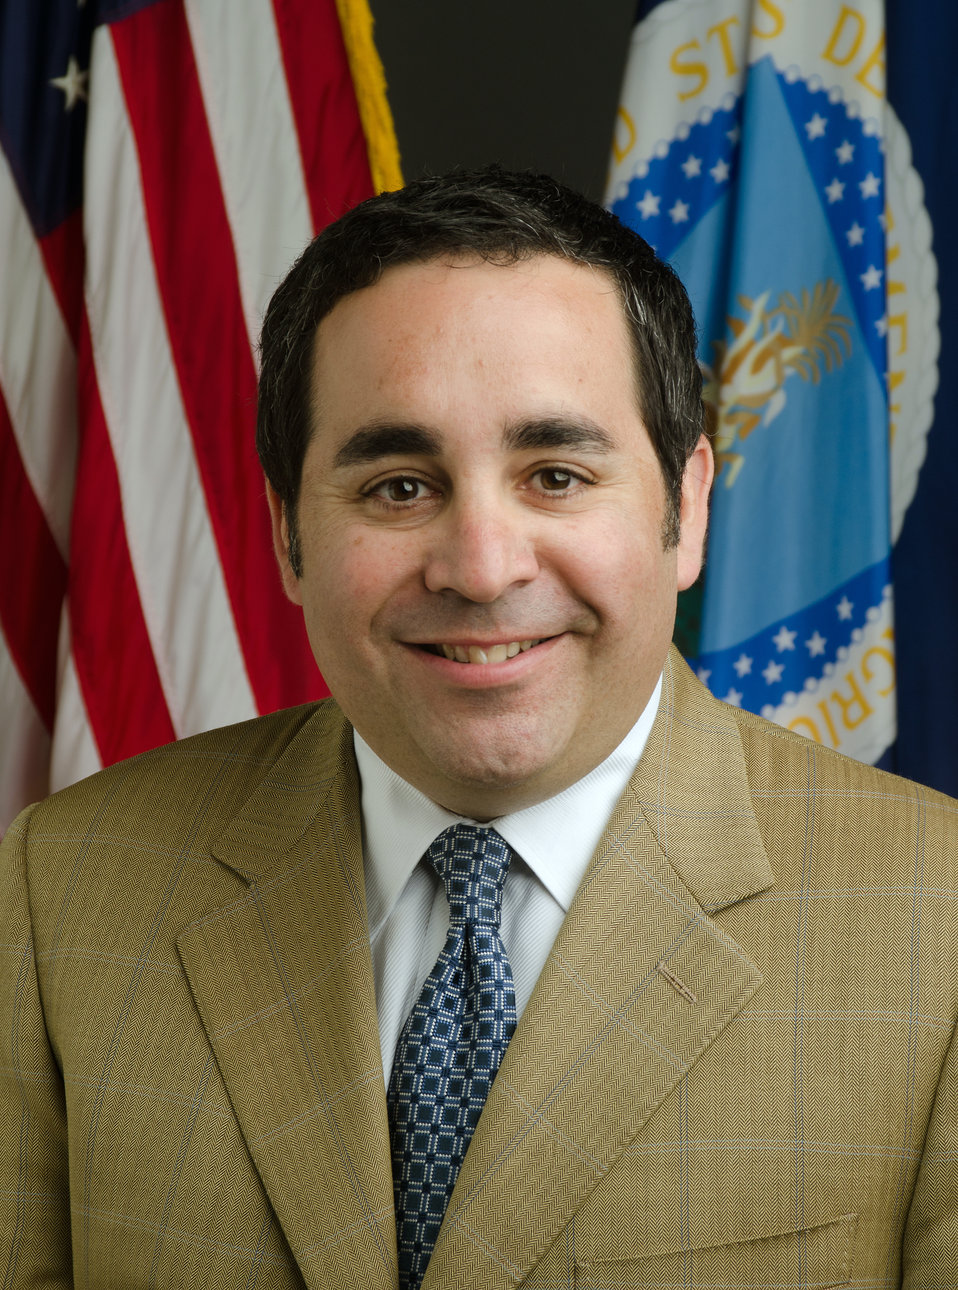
20110425-OSEC-LSC-0008 Senior Advisor to the Secretary Max Holtzman

Max Holtzman is Senior Advisor to Agriculture Secretary Tom Vilsack.